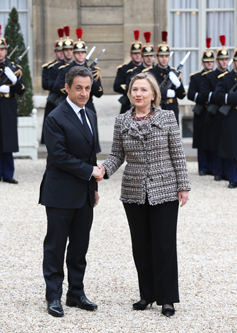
Secretary Clinton Is Welcomed By French President Sarkozy

U.S Secretary of State Hillary Rodham Clinton is welcomed by French President Nicolas Sarkozy to the Crisis summit on Libya at the Elysee Palace in Paris, France, on March, 19, 2011.